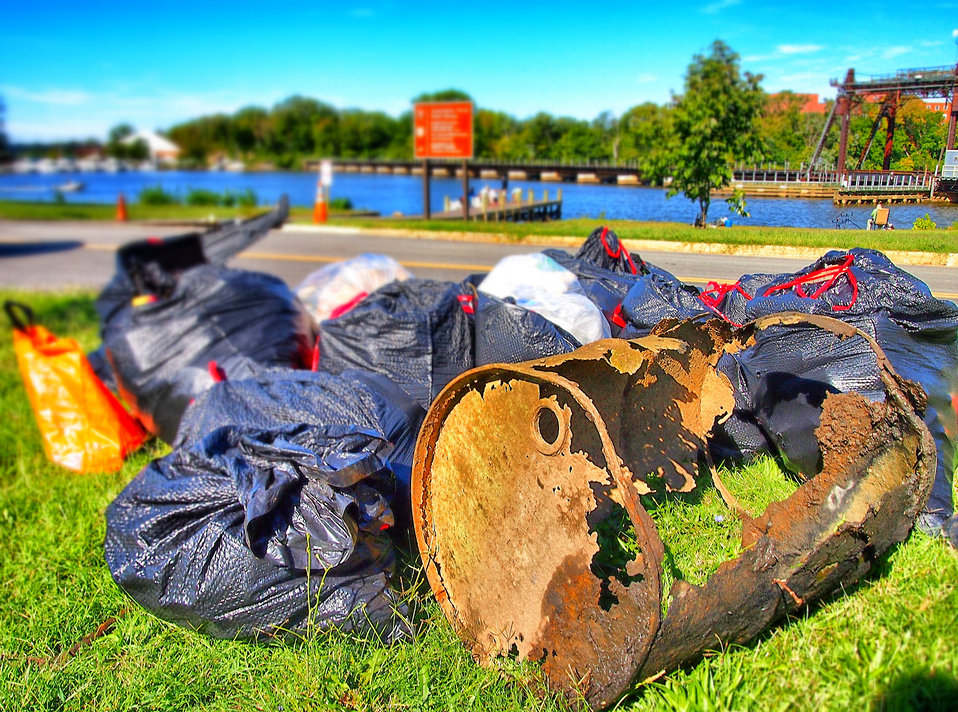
September 15, 2012 Trash collected at Anacosta River cleanup

Bags of trash and other items started to pile up as volunteers combed the Anacostia River in Washington, D.C. as part of the 2012 International Coastal Cleanup on September 15, 2012.

On this day in 2011, nearly 600,000 International Coastal Cleanup volunteers cleaned up over 9 MILLION pounds of trash around the world.

More EPA information on this global event